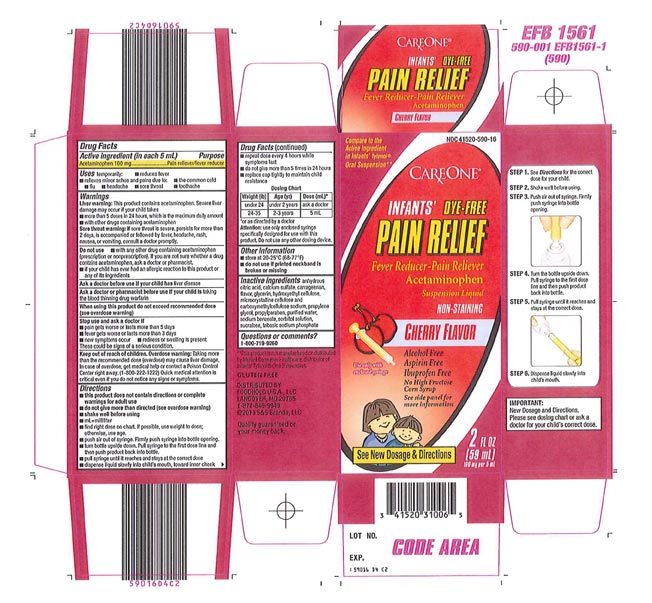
Recalled - Acetaminophen infant suspension liquid

November 1, 2013 – Product Recall – Perrigo Initiates Nationwide Voluntary Product Recall of Acetaminophen Infant Suspension Liquid, 160 Mg/5 Ml, Due to a Potential Defect with the Co-packaged Oral Syringe.